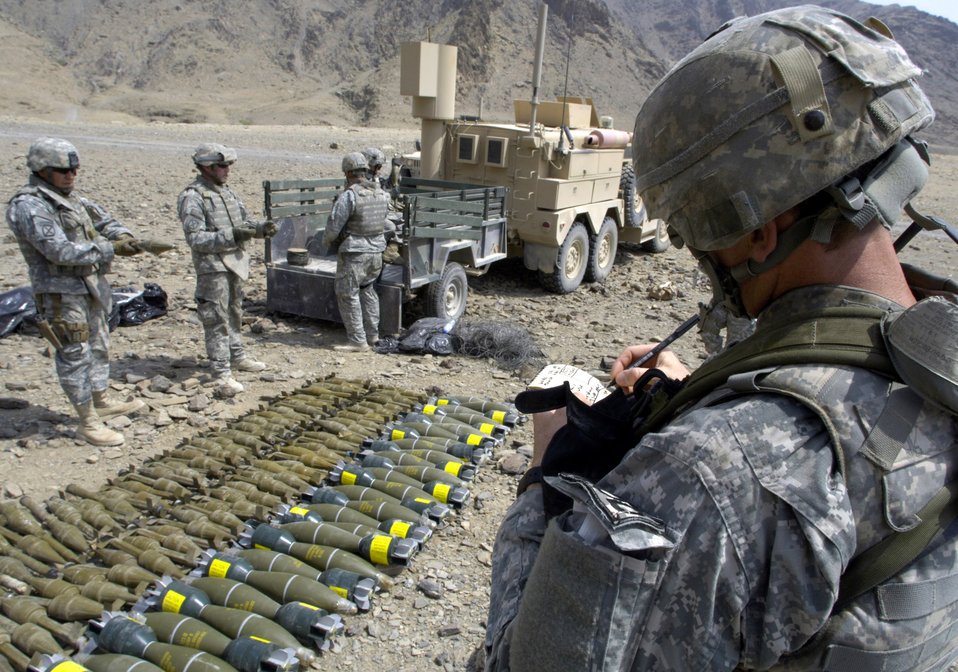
Small rewards program results in big explosion

Air Force explosive ordnance disposal specialists ready ammunition for a controlled detonation Sept. 1 at Forward Operating Base Mehtar Lam, Afghanistan. Nearly 900 pounds of small arms ammunition, rocket-propelled grenades and mortars were turned in by provincial citizens.